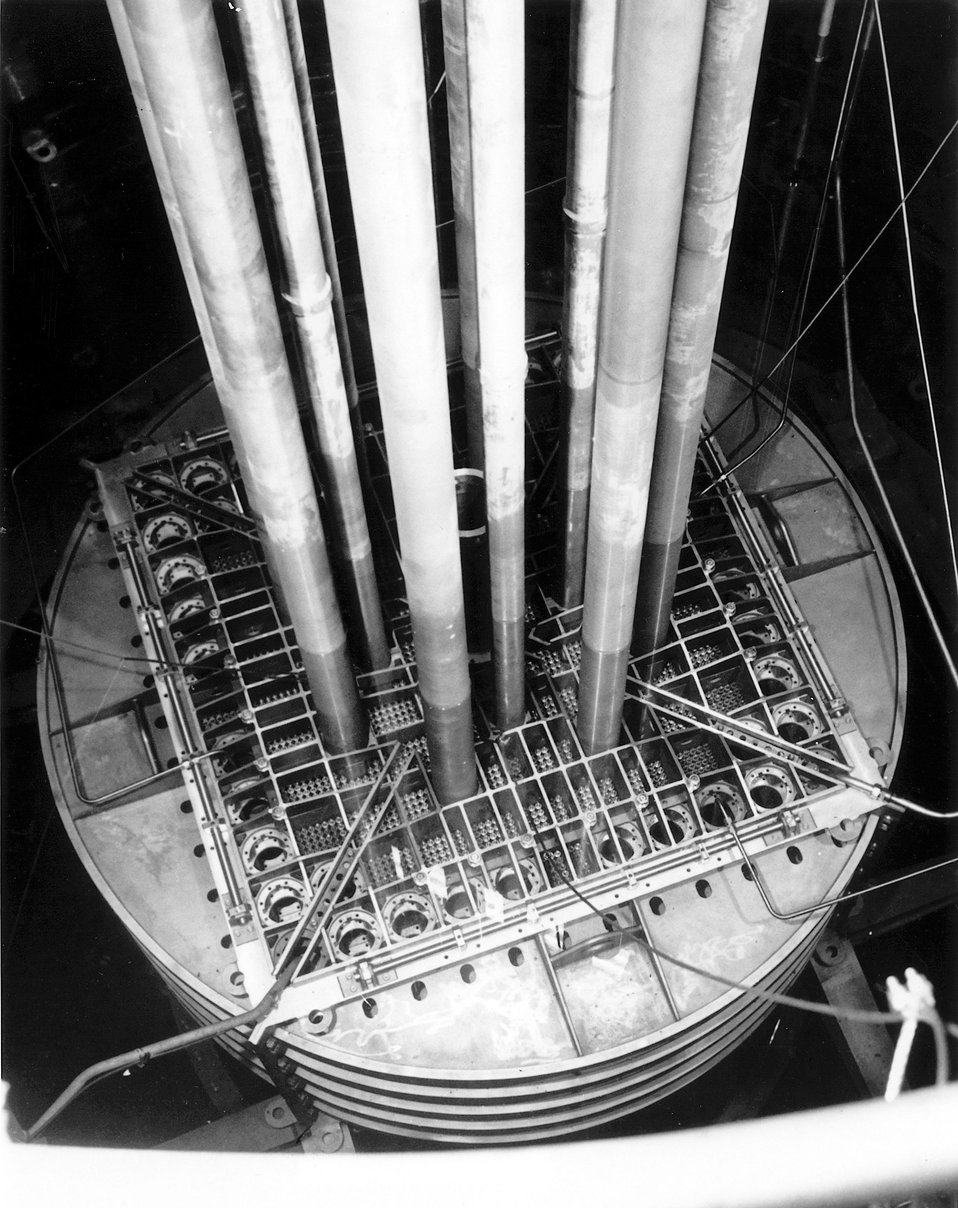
NRTS, Idaho... View from reactor vessel rim of Power Burst Facility (PBF) core at the U.S. Atomic Energy Commission's National Reactor Testing Station in Idaho. Circa 1974.